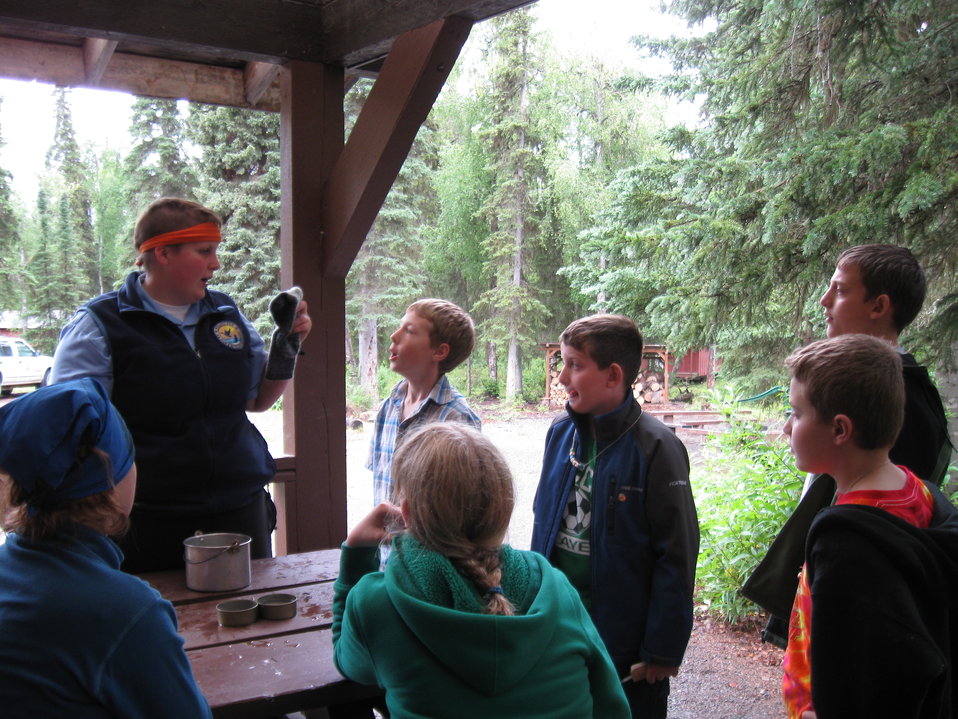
Kenai National Wildlife Refuge, AK

Hypothermia Lesson Adventure Camp, Credit USFWS